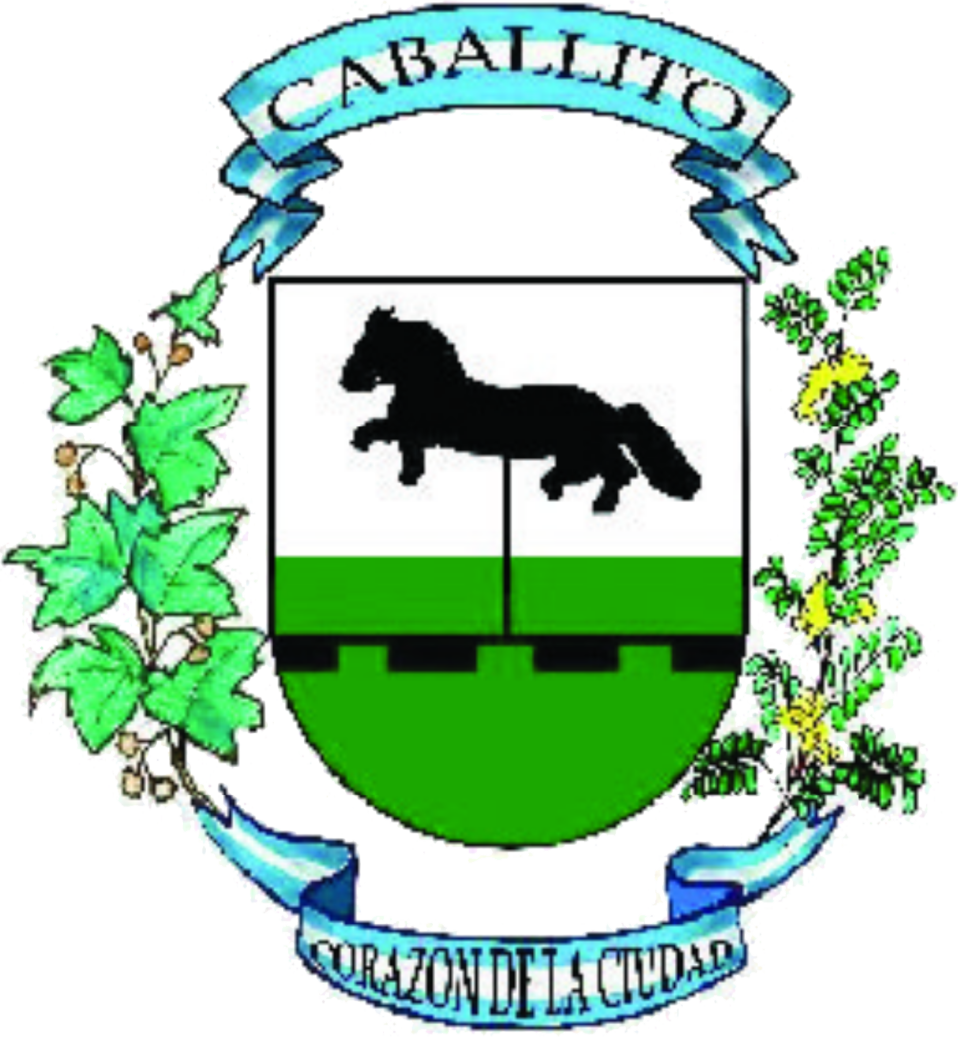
Official emblem of the Buenos Aires' bario of Caballito, as of August 2011